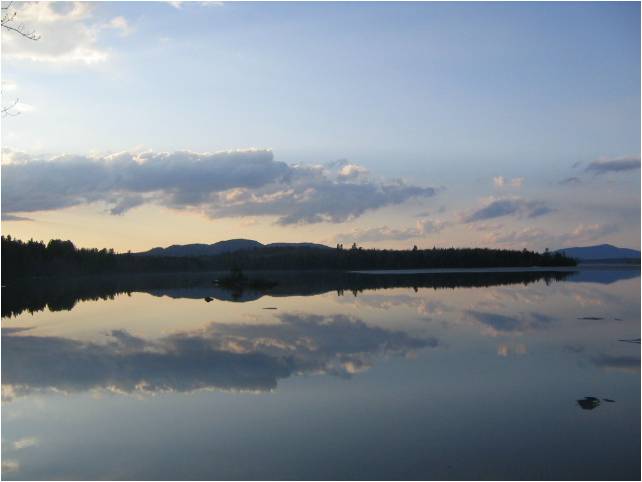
Lake Umbagog - Umbagog National Wildlife Refuge near Errol, ME